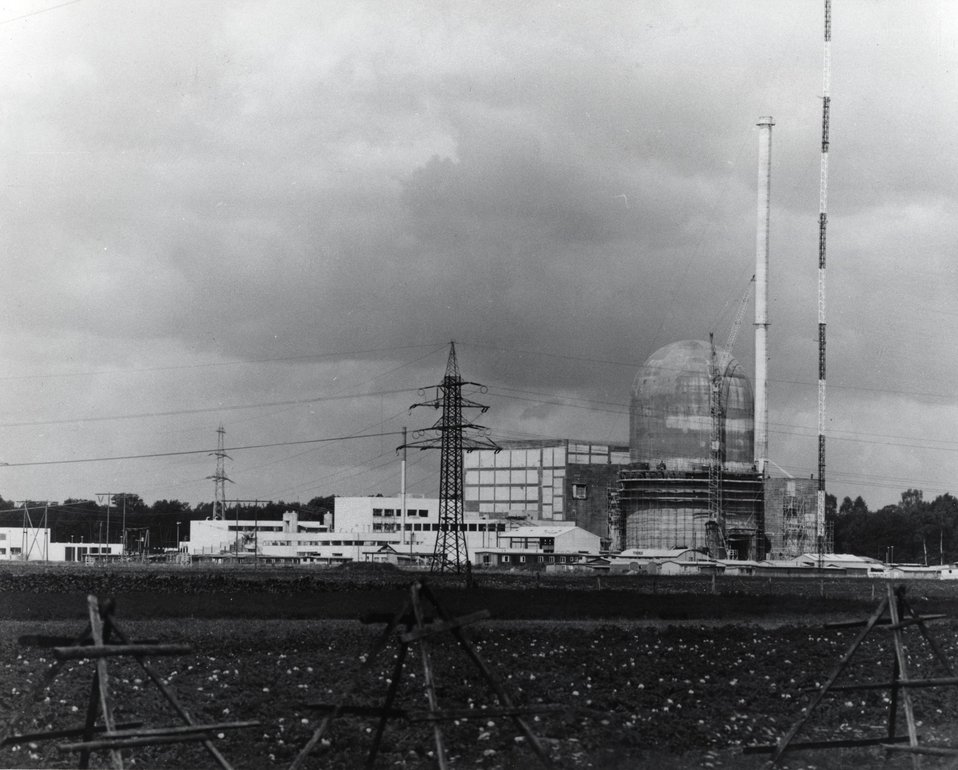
Kernkraftwerk Gundremmingen on the Danube. Exterior view. c. 1967